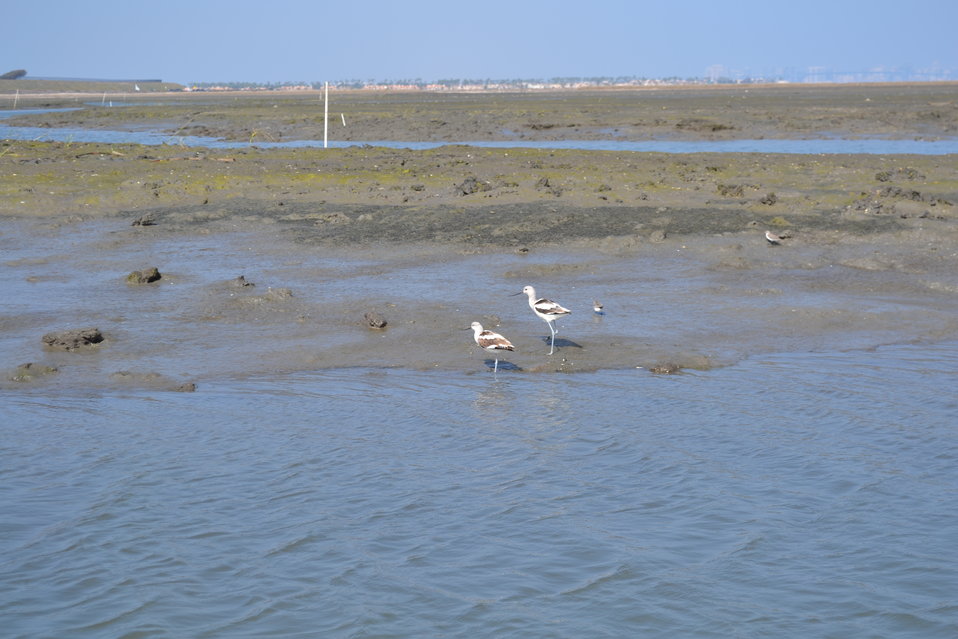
American avocets in non-breeding plumage check out newly-dredged channels

Avocets, among hundreds of other shorebirds each day, came in search of newly-exposed mudflats as the receding tide exposed mollusks that hadn't been accessible in over 50 years. Taken on 10.21.11